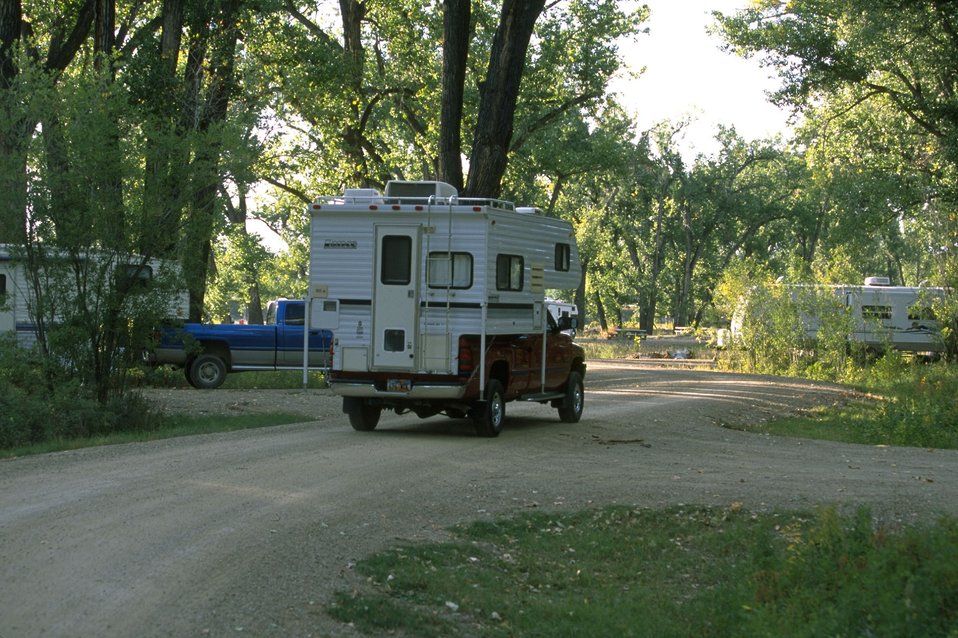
Kipp recreation area with pickup camper